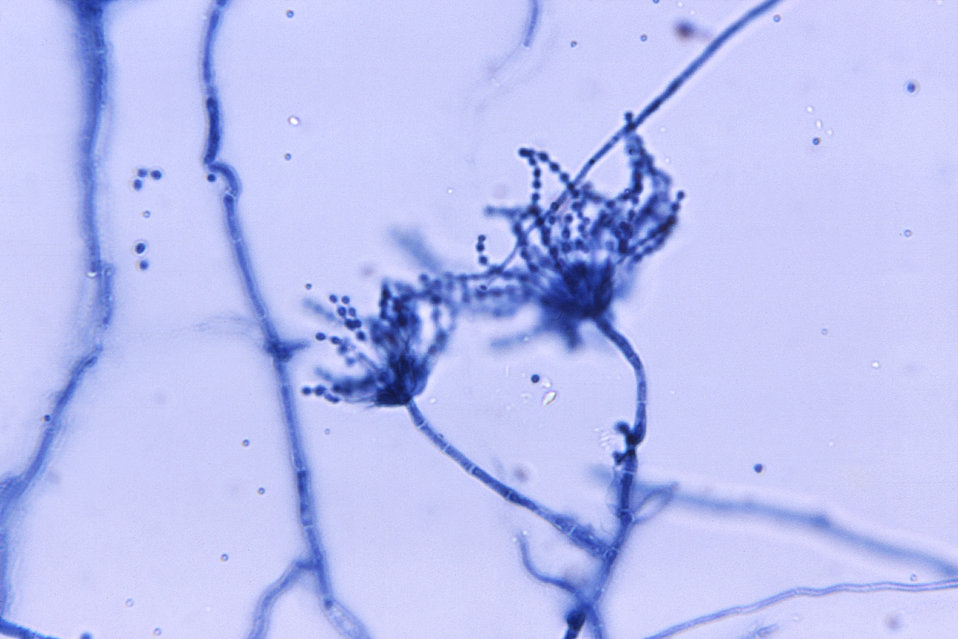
These are conidiophores with conidia of Penicillium marneffei that were isolated from a splenic abscess.